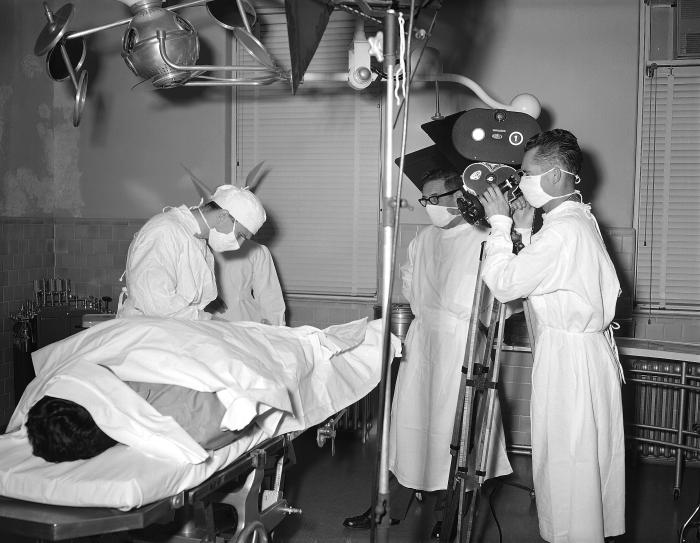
This historic image created in 1959 depicted a Centers for Disease Control (CDC) motion crew as they were in the process of filming a physician who was examining a patient in the Public Health Service (PHS) Hospital located in Carville, Louisianna.